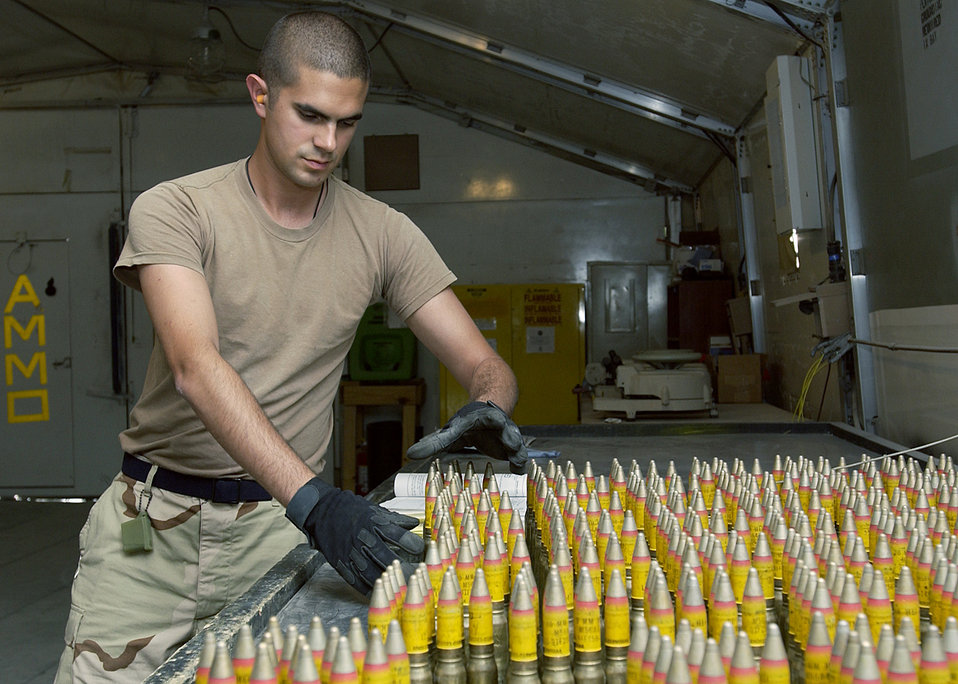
An explosive business

SOUTHWEST ASIA -- Airman 1st Class Anthony Meyerhoffer inspects and counts 20 mm high-explosive incendiary rounds. Airman Meyerhoffer is deployed from Dyess Air Force Base, Texas. He is assigned to the 379th Expeditionary Maintenance Squadron munitions flight at a forward-deployed location.